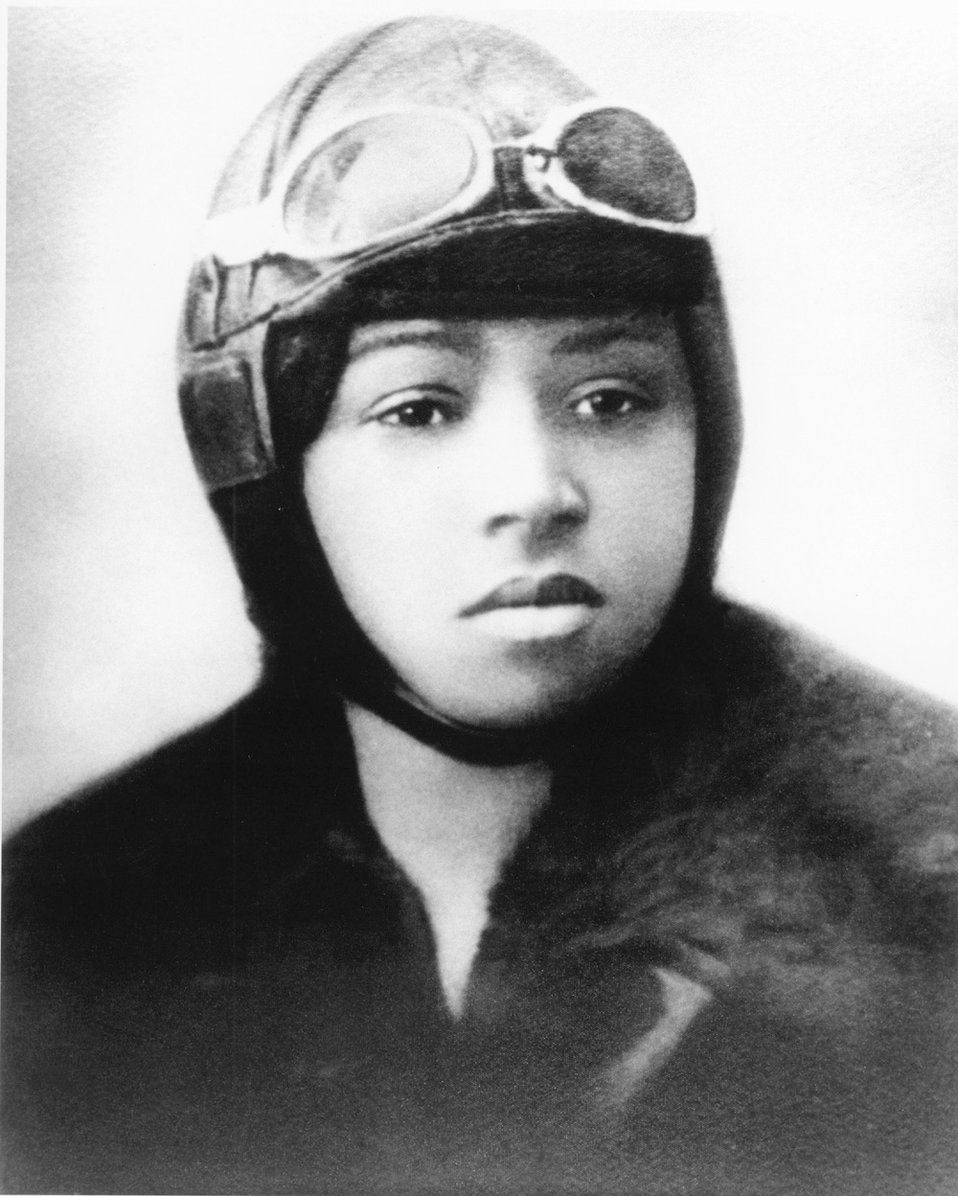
Bessie Coleman begins series highlighting African-Americans who made impact on aviation

Bessie Coleman: First African-American female pilot